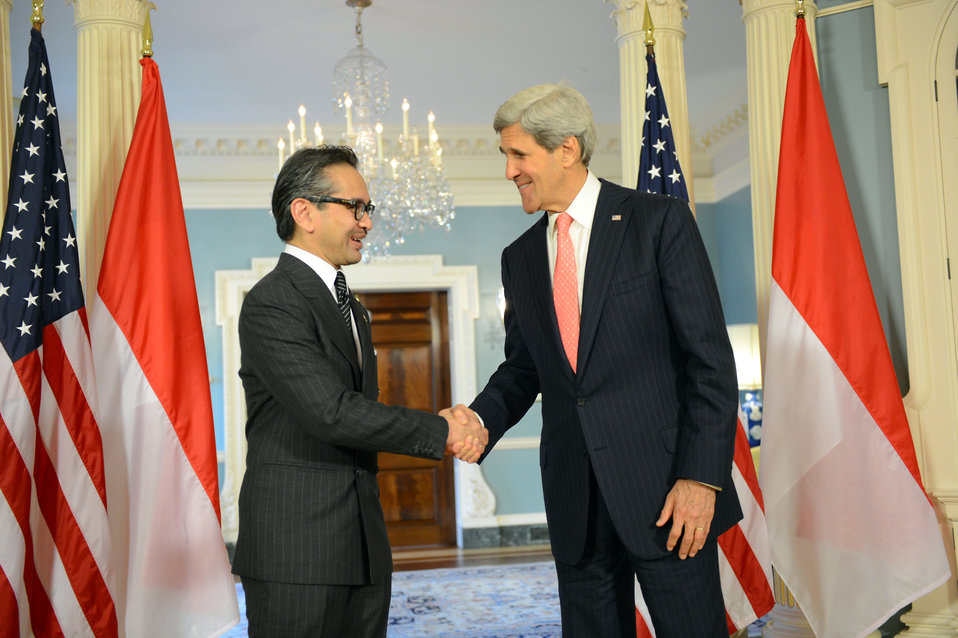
Secretary Kerry Shakes Hands With Indonesian Foreign Minister Natalegawa

U.S. Secretary of State John Kerry shakes hands with Indonesian Foreign Minister R.M. Marty Natalegawa at the U.S. Department of State in Washington, D.C., on May 16, 2013.